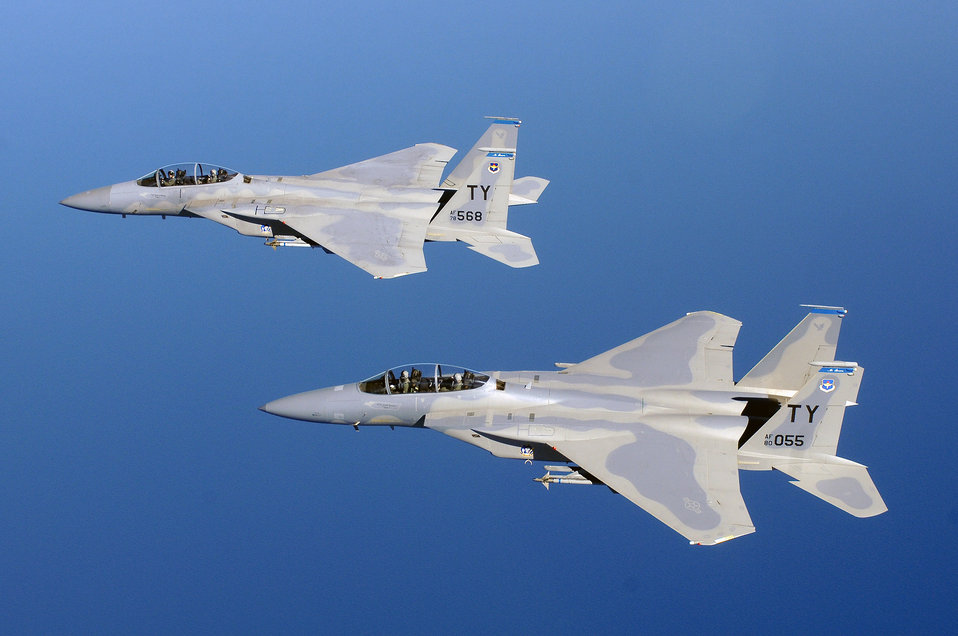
NASCAR driver gets flight of life

Mike Shiplett, foreground, and Reed Sorenson, background, receive incentive rides in F-15 Eagles from pilots of the 95th Fighter Squadron Jan. 23 at Tyndall Air Force Base, Fla. Mr. Sorenson, driver of Air Force sponsored No. 43 NASCAR, and his crew chief received incentive flights to gain a better understanding of the Air Force and its global mission.